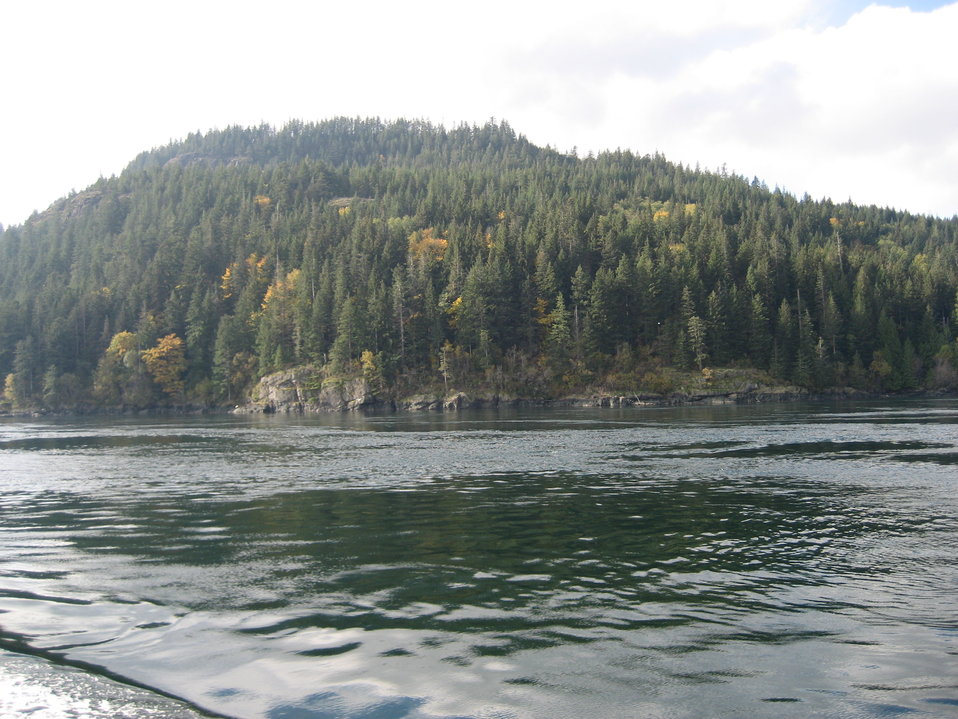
A fall scene along the Inside Passage.